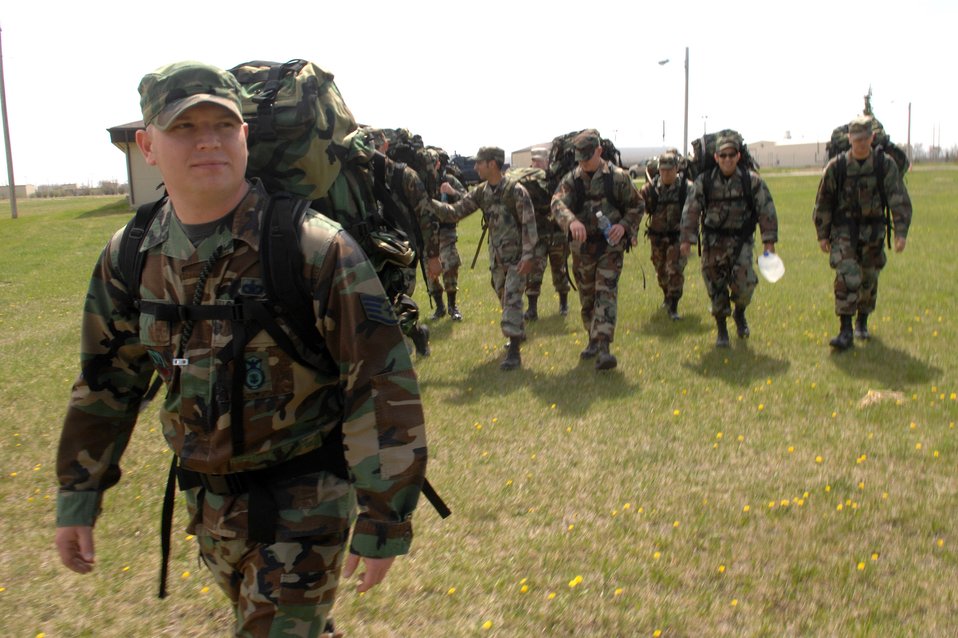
Support For Injured Airman

Airmen from the 5th Security Forces Squadron take part in a